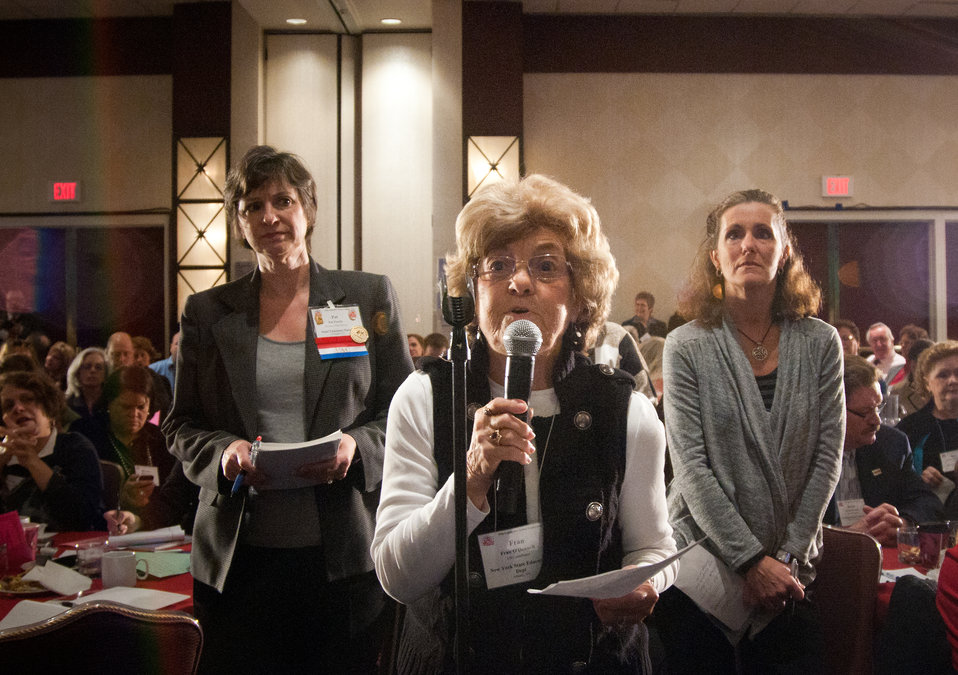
New York State Education Dept. coordinator, Fran O’Donnel (center), put a question to U.S. Department of Agriculture Secretary Tom Vilsack (not seen) during the School Nutrition Association’s closing general session of their 39th annual Legislative Action Conference at the J.W. Marriott Hotel in Washington, D.C., on Wednesday, March 9, 2011. The theme of the Secretary Vilsack’s speech was “The Realities of Implementing New Meal Patterns and Operational Requirements.”